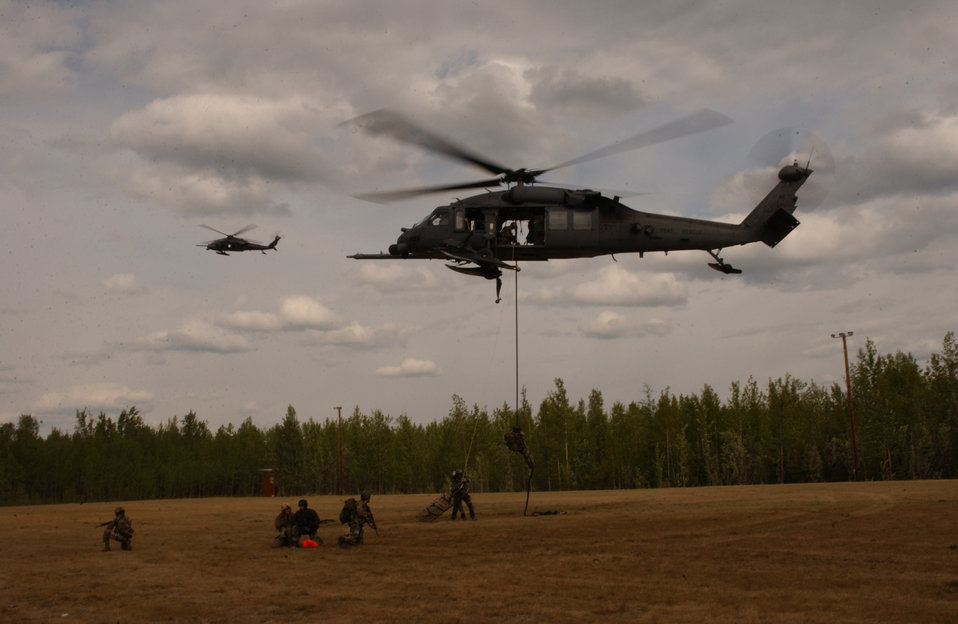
To the rescue during Northern Edge 2006

Airmen from the 31st Rescue Squadron at Kadena Air Base, Japan, fast-rope out of an HH-60 Pave Hawk during a combat search and rescue mission for exercise Northern Edge 2006 at Fort Wainwright, Alaska, on June 6, 2006. Northern Edge is a joint training exercise hosted by Alaskan Command and is one of a series of U.S. Pacific Command exercises that prepare joint forces to respond to crises in the Asian Pacific region.